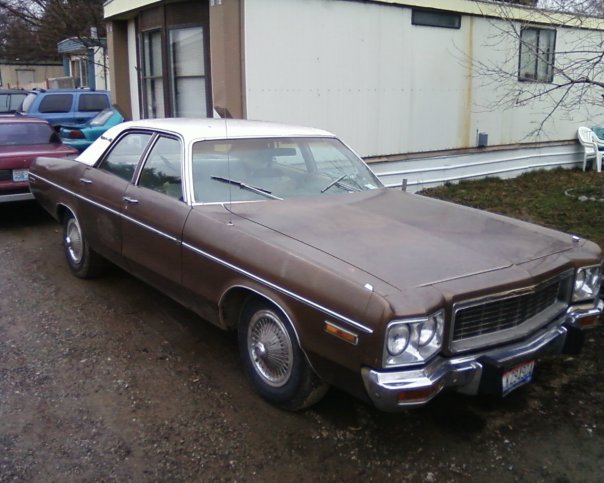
1973 Dodge Polara 4 door.